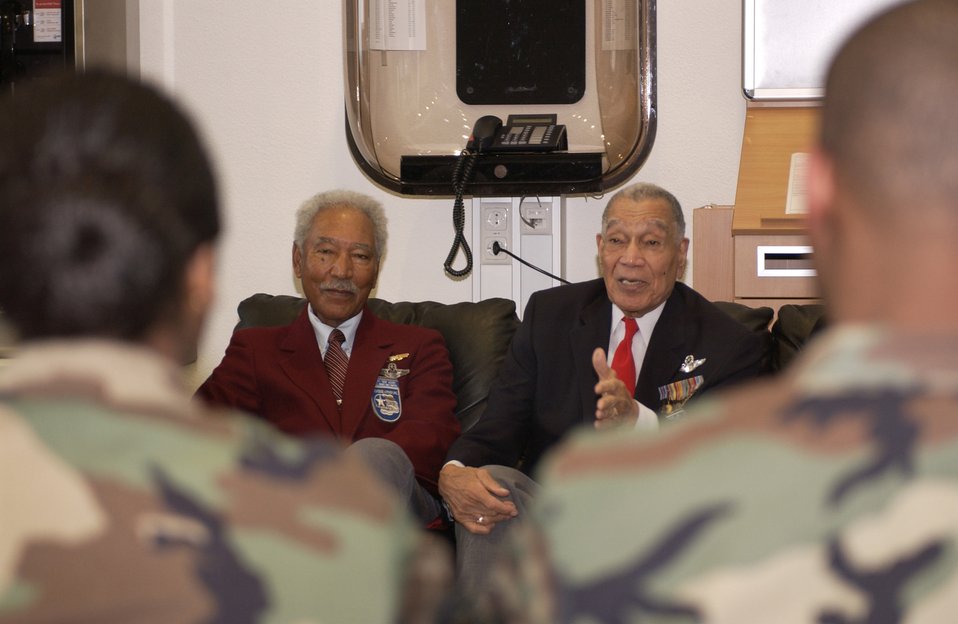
Tuskegee Airmen visit Spangdahlem

SPANGDAHLEM AIR BASE, Germany (AFPN) -- Retired Lieutenant Colonels Robert Ashby and Lee Archer, members of the original Tuskegee Airmen, visit the 726th Air Mobility Squadron. The Tuskegee Airmen visited the base Feb. 21 as part of the celebration of African-American History Month.